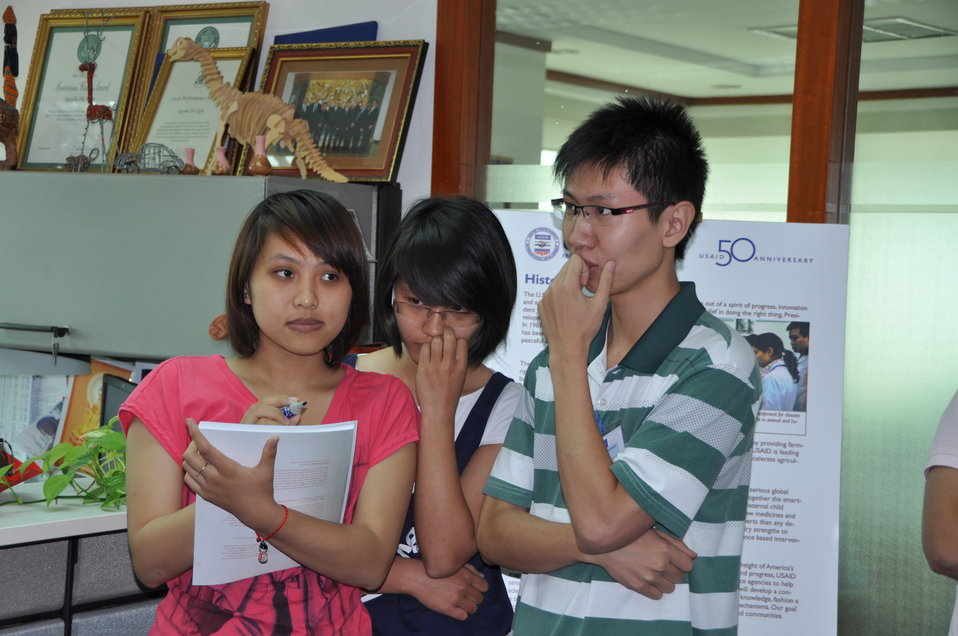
USAID 50th Anniversary Open House, USAID Vietnam